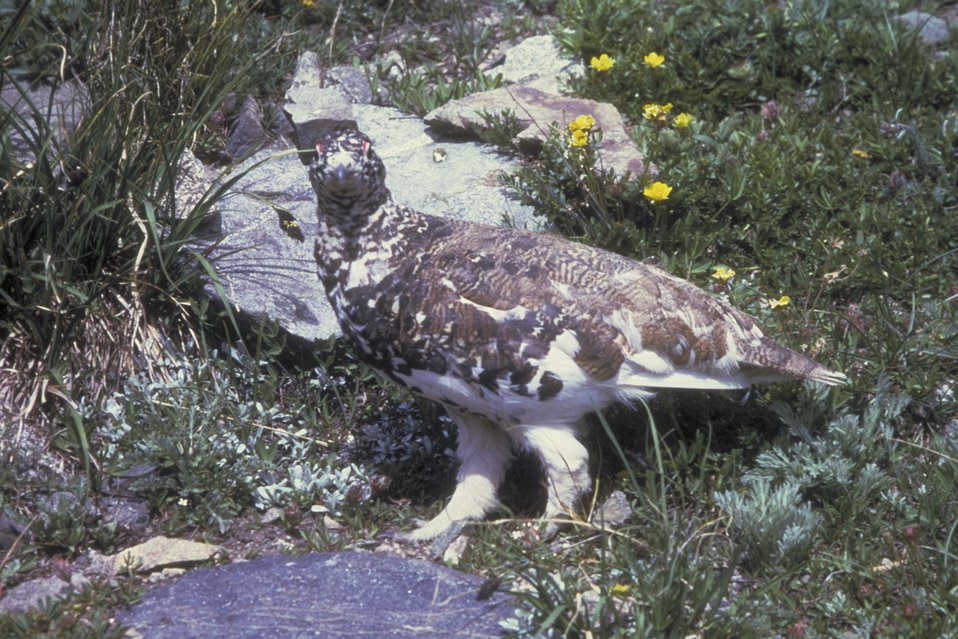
Ptarmigan